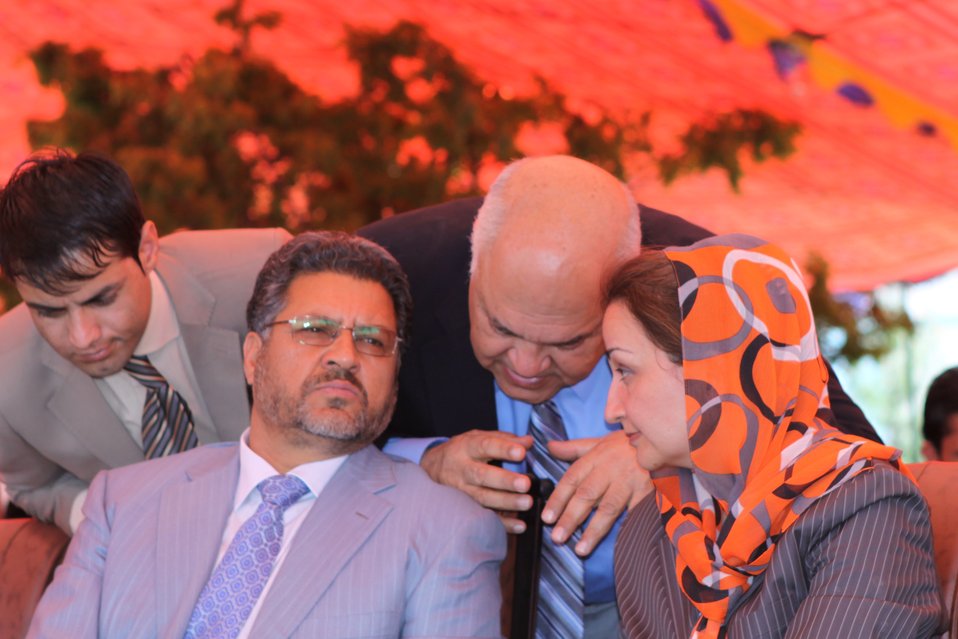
100522 ATVI Graduation 097